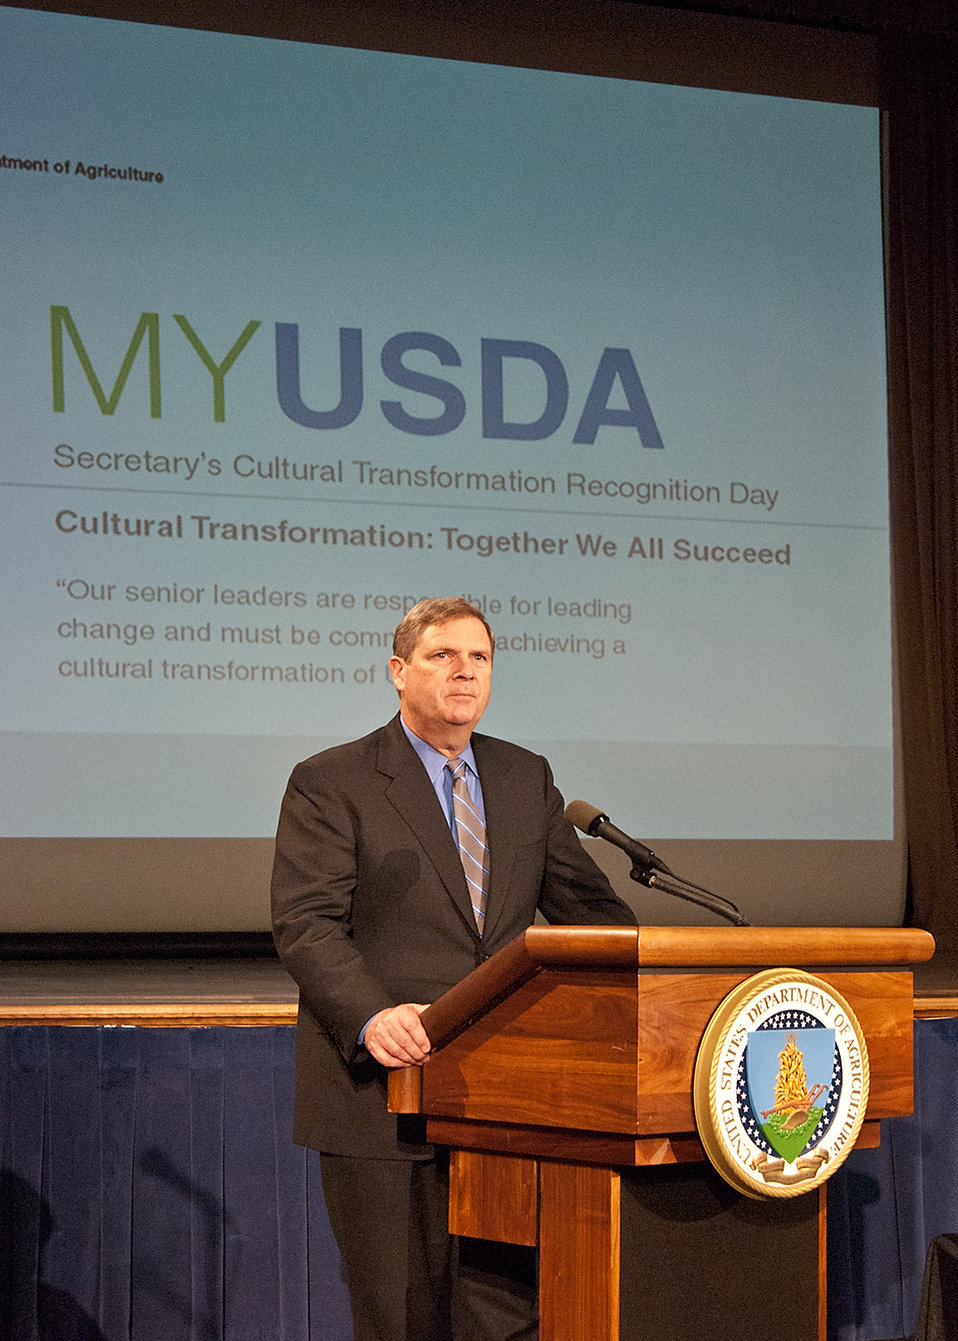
Agriculture Secretary Tom Vilsack addresses U.S. Department of Agriculture employees during the Cultural Transformation Recognition Ceremony at the Jefferson Auditorium, US Department of Agriculture in Washington, DC, on Tuesday, October 4, 2011. Cultural Transformation is the process of creating a workplace where all employees and customers are treated with dignity, respect and the opportunity for success. Recognizing the important contributions of all employees to the operation of the United States Department of Agriculture. The goal of cultural transformation is to get everyone at USDA – from the Under Secretaries to employees at every grade level, in every location - to ensure USDA is a place where there’s opportunity for all to reach their full potential. Only then can USDA provide its customers with exceptional service in an equitable manner.